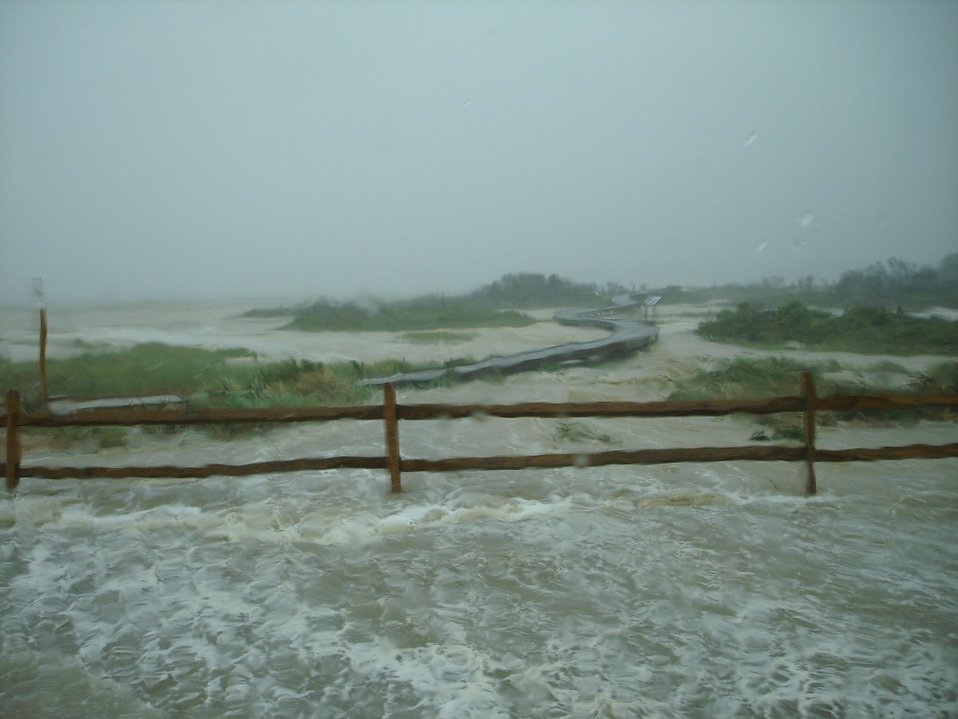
Flooded boardwalk near Toms Cove Visitor Center at Chincoteague National Wildlife Refuge in Virginia. The flooding was caused by Hurricane Irene.
(Photo: USFWS)

In August, 2011, Hurricane Irene hit the east coast and affected several National Wildlife Refuges, as well as environments up and down the East Coast.